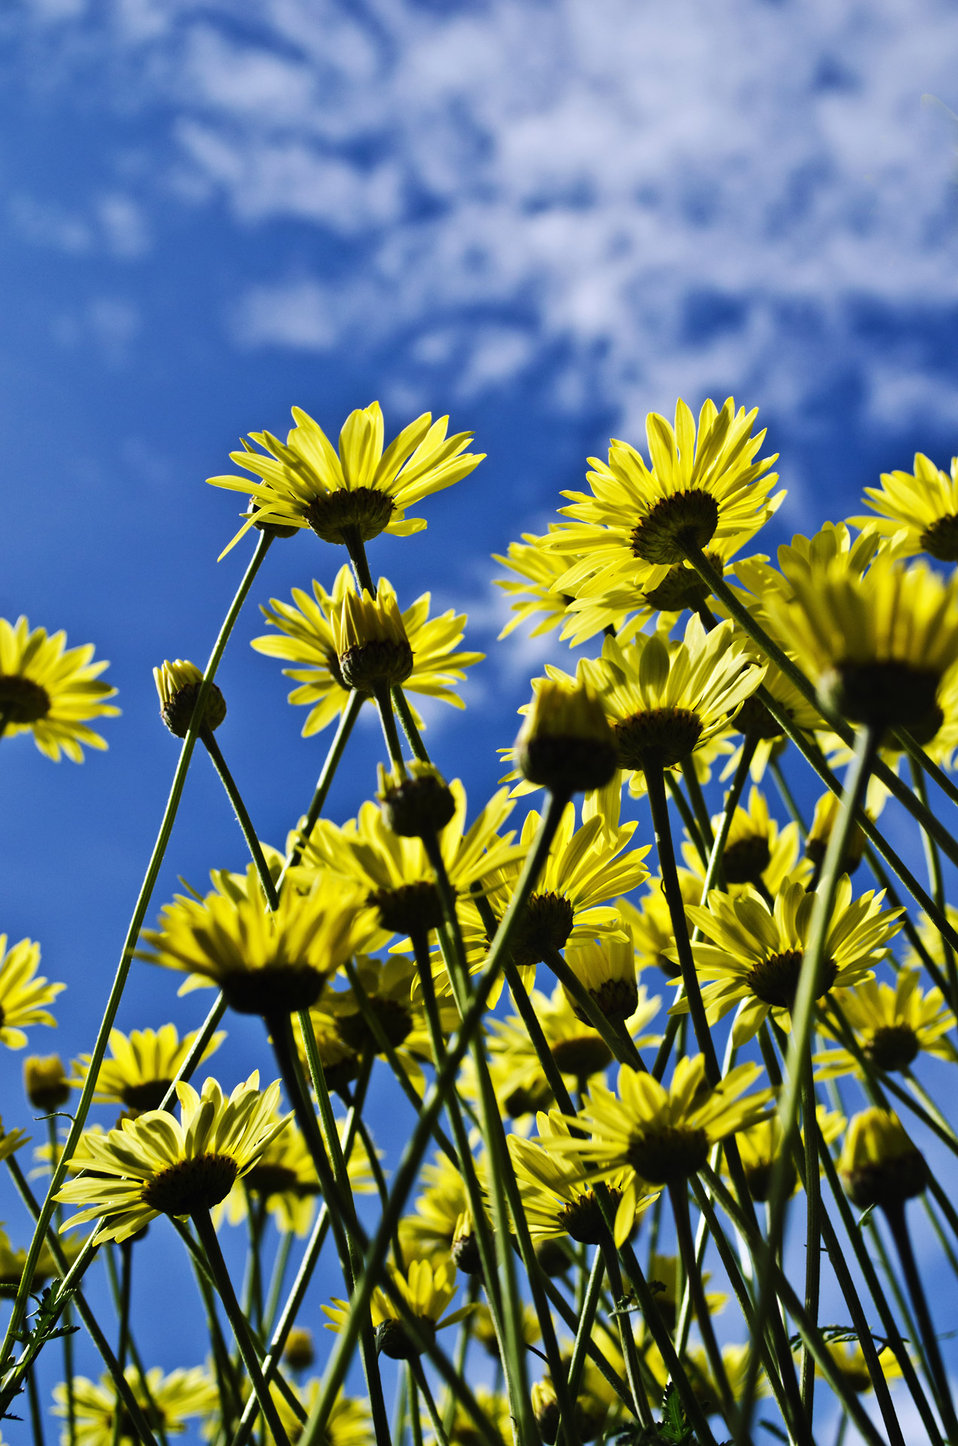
Summer flowers

Summer flower.